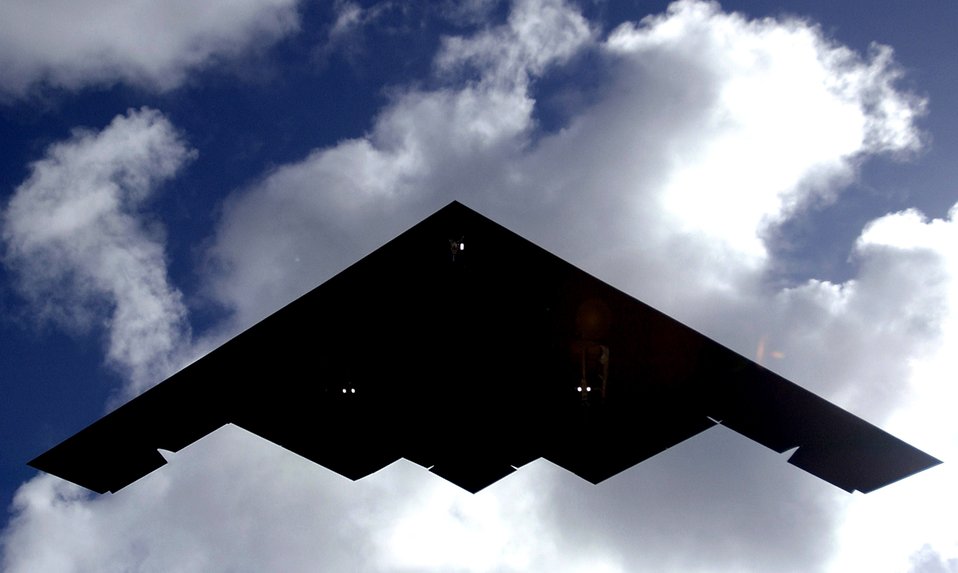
B-2s arrive at Andersen

A B-2 Spirit lands at Andersen Air Force Base, Guam, on Sunday, April 30, 2006. B-2s are replacing the B-1B Lancers at Andersen as part of the continuous bomber rotation.